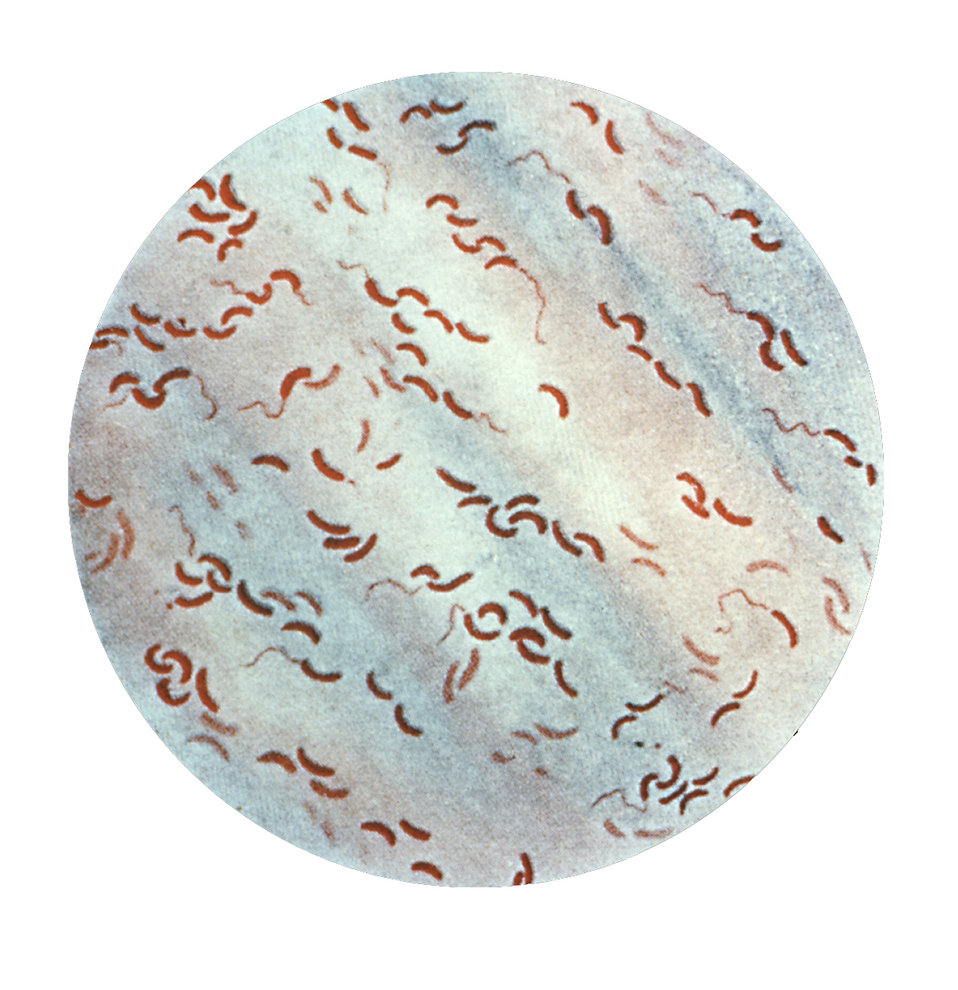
This Gram-stain depicts flagellated Vibrio comma bacteria, a strain of V. cholerae; the cause of Asiatic cholera.